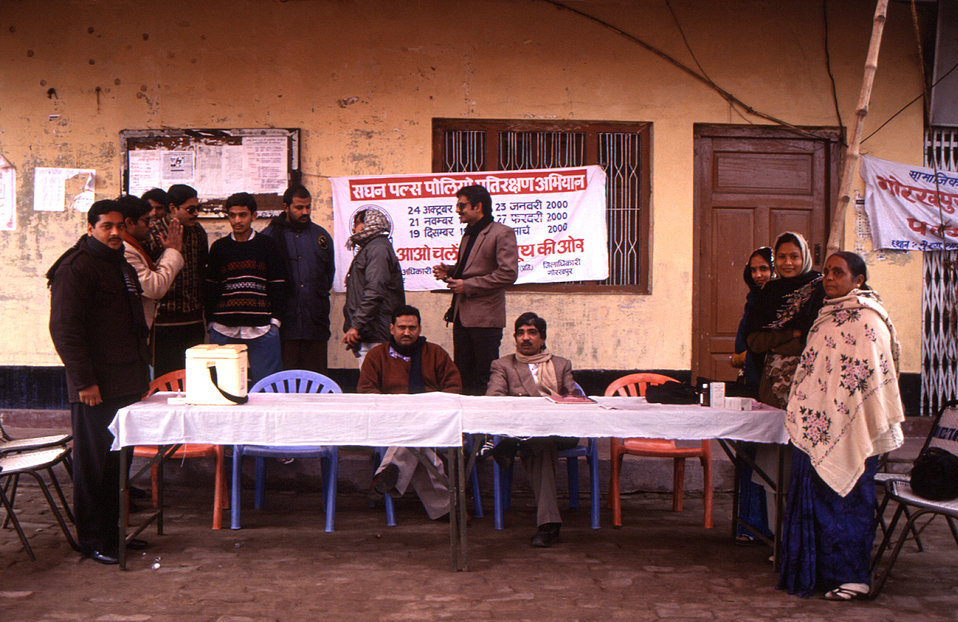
This image depicted a number of Indian health care practitioners setting up their booth on a country-wide National Immunization Day (NID), from which they distributed informative leaflets, as well as administered polio vaccinations. Thousands of children throughout the country receive a polio vaccine on each NID. Since its inception in the fall of 1998, the STOP Transmission of Polio (STOP) immunization initiative teams have worked in over 50 countries. In the first years of the program, most STOP team members worked primarily to bolster acute flaccid paralysis (AFP) surveillance, support 'national immunization' days, and conduct polio case investigation and follow-up.The image was provided by Chris Zahniser, B.S.N., R.N., M.P.H., a STOP Transmission of Polio (STOP) immunization initiative team member and photographer. Ms. Zahniser was at the time assigned to the state of Uttar Pradesh in northern India, and spent three months working in the Districts of Gorakhpur and Deoria.